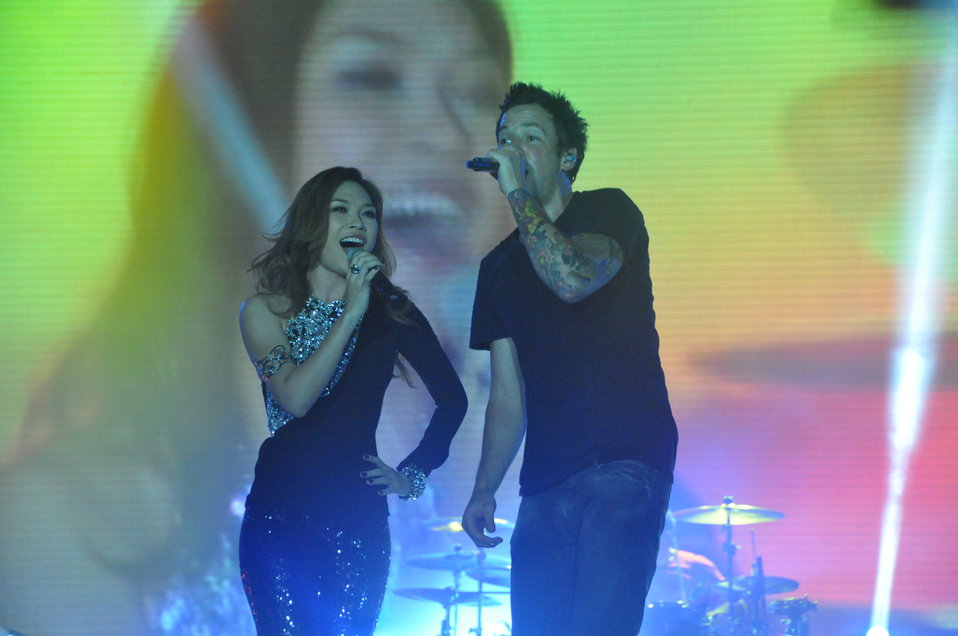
My Tam joins Simple Plan on stage at MTV EXIT concert in Hanoi against human trafficking

USAID co-sponsors MTV EXIT concert, campaign against human trafficking